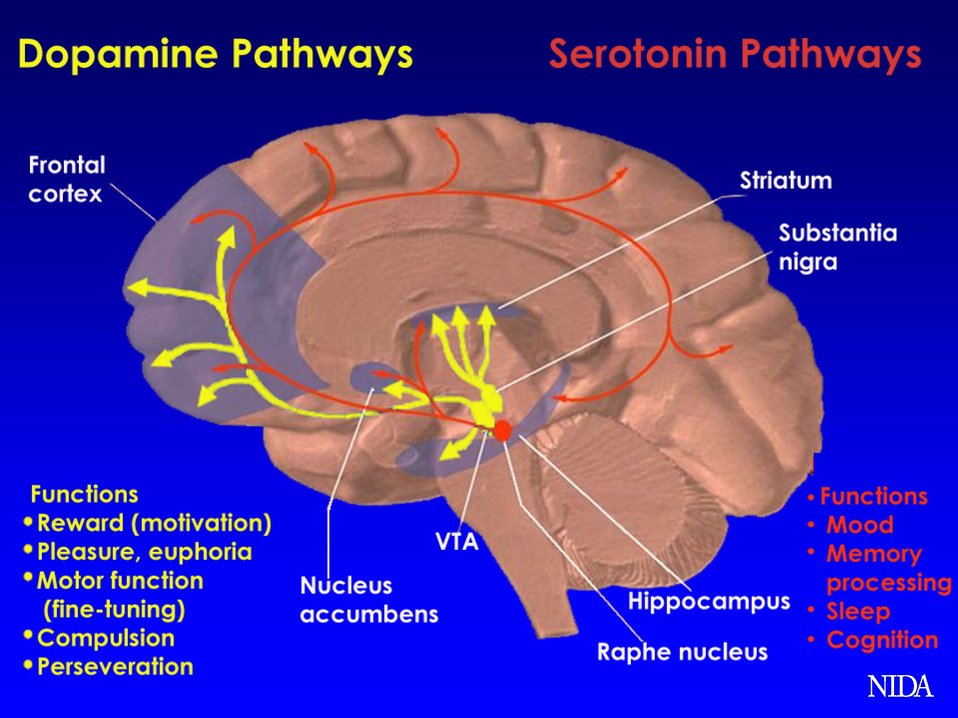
Brain pathways chart

Brain pathways affected by drugs of abuse - The dopamine and serotonin pathways are two brain systems affected by drugs of abuse